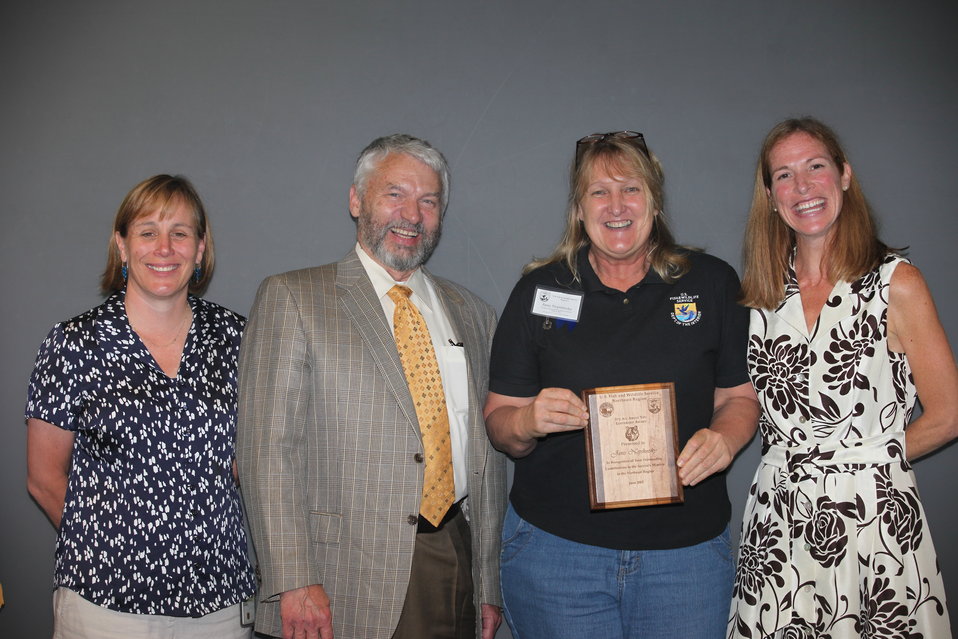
Janis Nepshinsky of the Rhode Island National Wildlife Refuge Complex was awarded a Special Eagle Award.
From left to right: Deputy Regional Director Deb Rocque, Deputy Director Rowan Gould, Janis Nepshinsky and Regional Director Wendi Weber